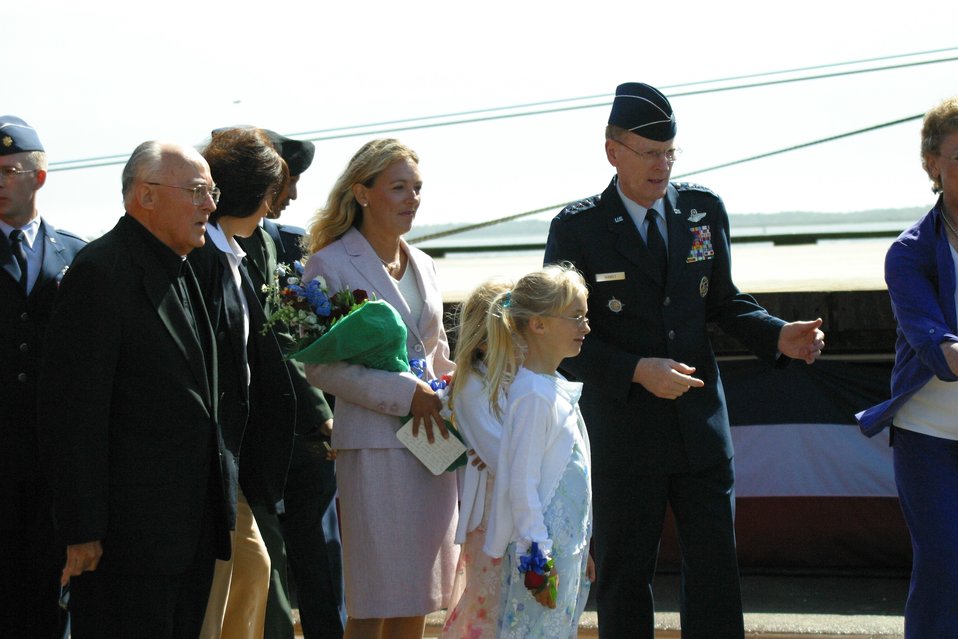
Ship takes heroic legacy to the fight

SUNNY POINT, N.C. -- Gen. John W. Handy greets the family of Tech. Sgt. John Chapman at the naming of a Military Sealift Command vessel in Chapman’s honor. General Handy is Air Mobility Command and Transportation Command commander.